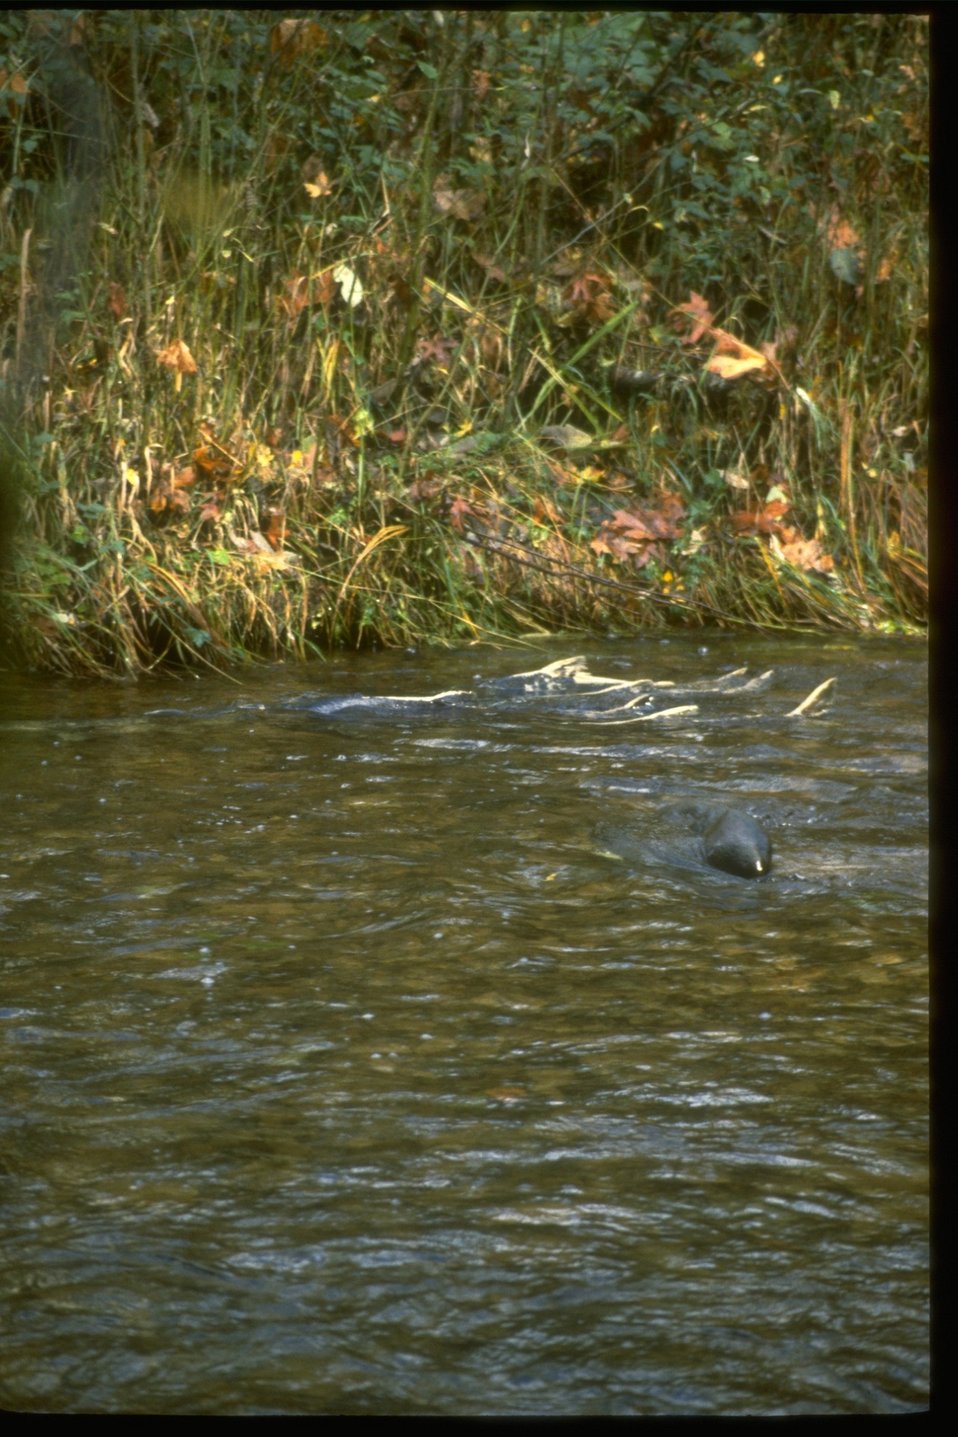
Chinnock Salmon swimming through Whitaker Creek